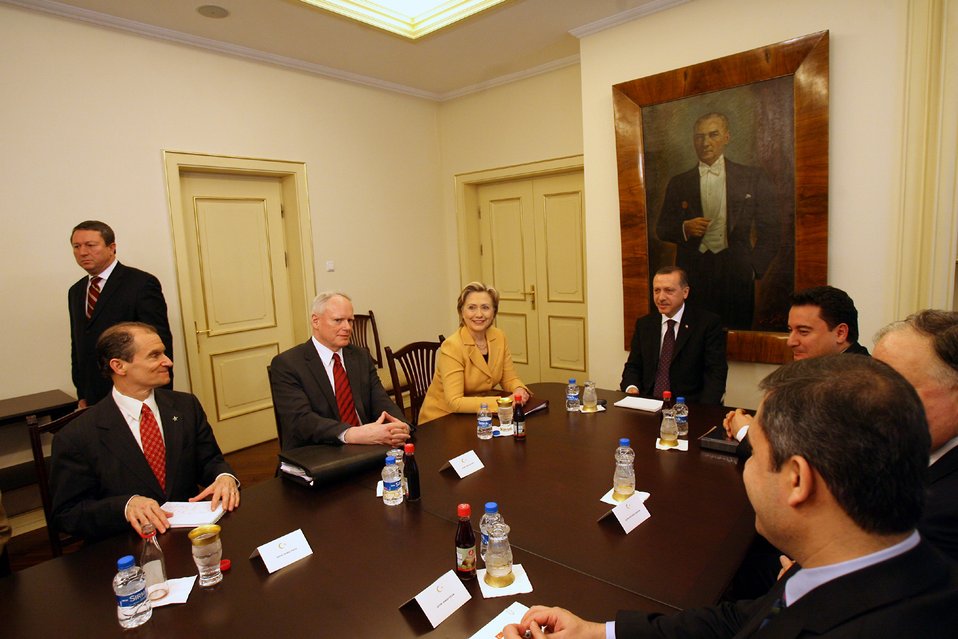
Secretary Clinton Meets With Turkish Prime Minister

U.S. Secretary of State Hillary Rodham Clinton meets with Prime Minister Recep Tayyip Erdogan in Ankara, Turkey March 7, 2009. From left to right: Assistant Secretary of State for European Affairs Daniel Fried, U.S. Ambassador to Turkey James Jeffrey, Secretary Clinton, Prime Minister Erdogan, Foreign Minister Ali Babacan.